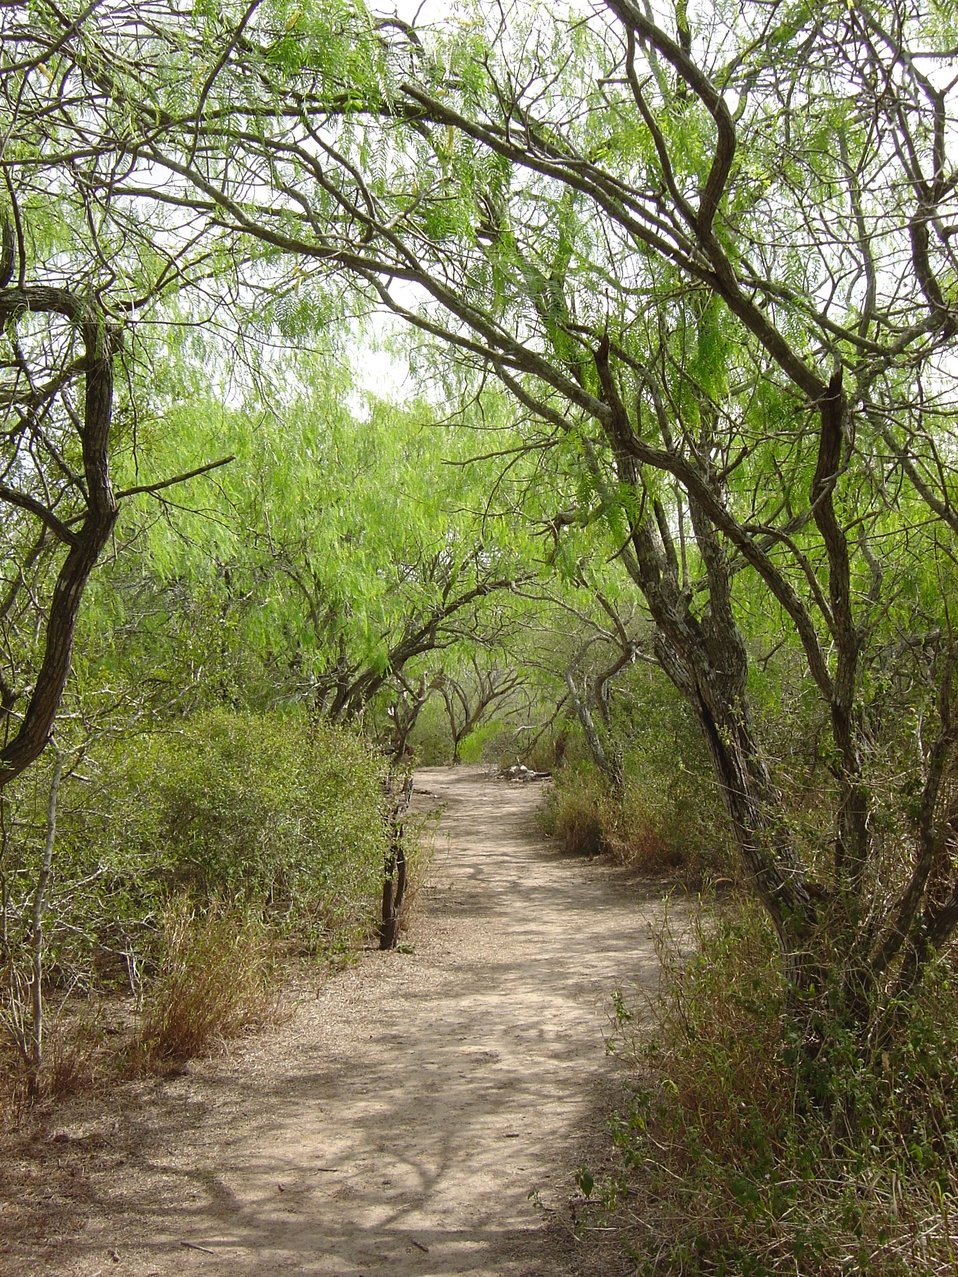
Laguna Atascosa NWR trail

A mesquite trail leads into wildlife habitat at Laguna Atascosa National Wildlife Refuge in Texas. (USFWS)